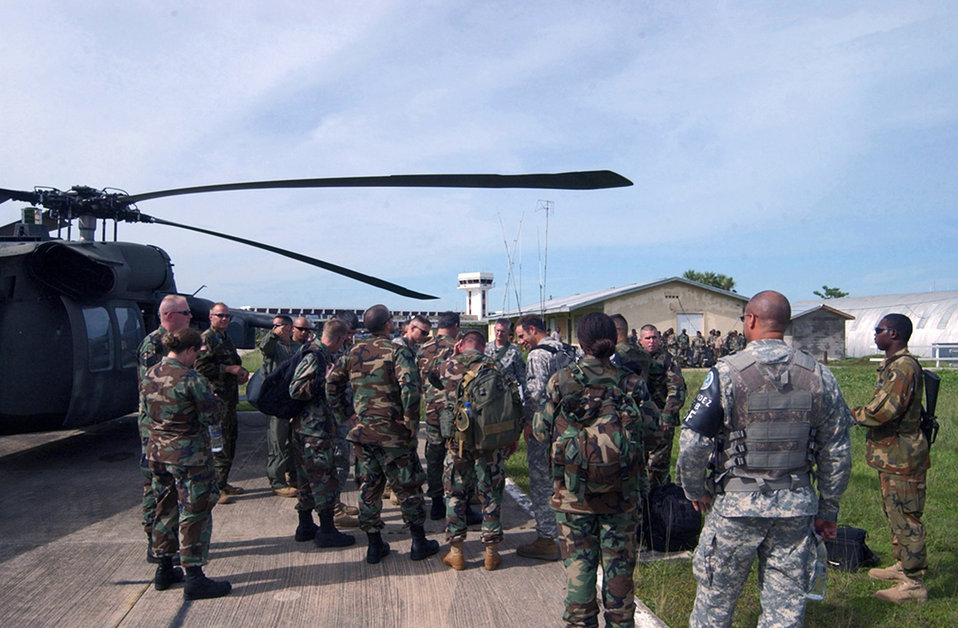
Assessment team arrives in Belize

Approximately 20 Soldiers and Airmen from Joint Task Force-Bravo at Soto Cano Air Base, Honduras, deployed to Belize City, Belize, as part of an initial assessment team following Hurricane Dean Aug 21. The team comprises a security detail, medics, engineers, search and rescue assets and communications specialists.